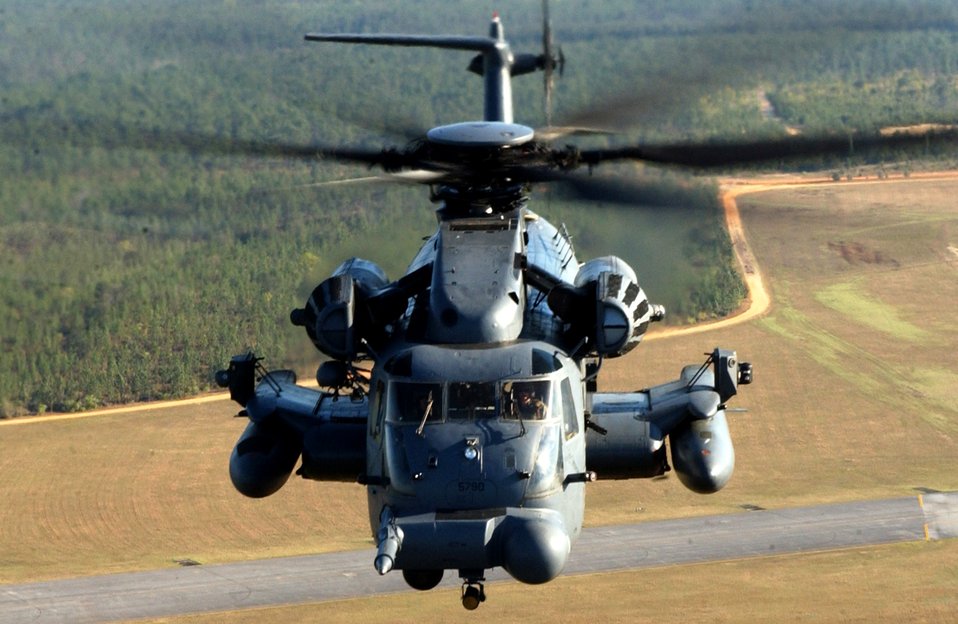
Low-level flying

An MH-53 Pave Low helicopter flies over Florida on Friday, March 24, 2006. The helicopter can fly long ranges at low levels in adverse weather. The Pave Low is from the 20th Special Operations Squadron at Hurlburt Field, Fla.